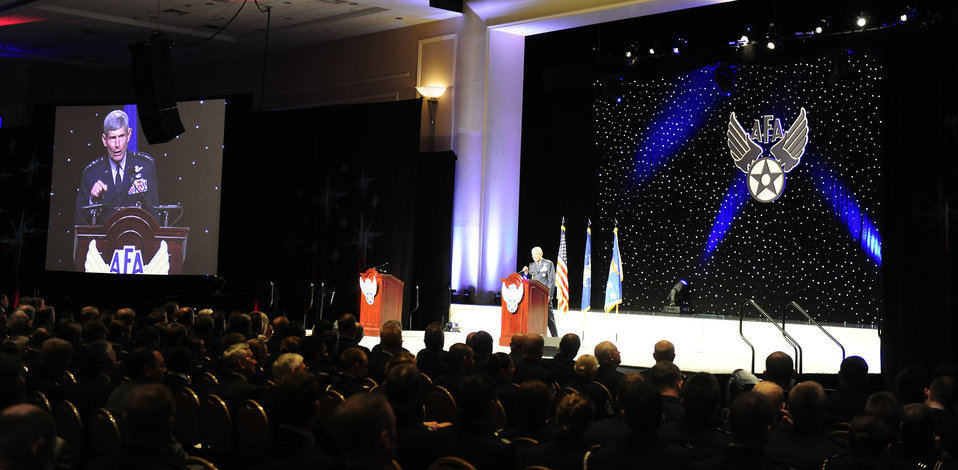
Chief of staff highlights contributions

Air Force Chief of Staff Gen. Norton Schwartz gives his keynote address Sept. 14, 2010, during the Air Force Association 2010 Air and Space Conference and Technology Exposition at National Harbor in Oxon Hill, Md. General Schwartz discussed the role of the Air Force in the 21st century strategic environment.